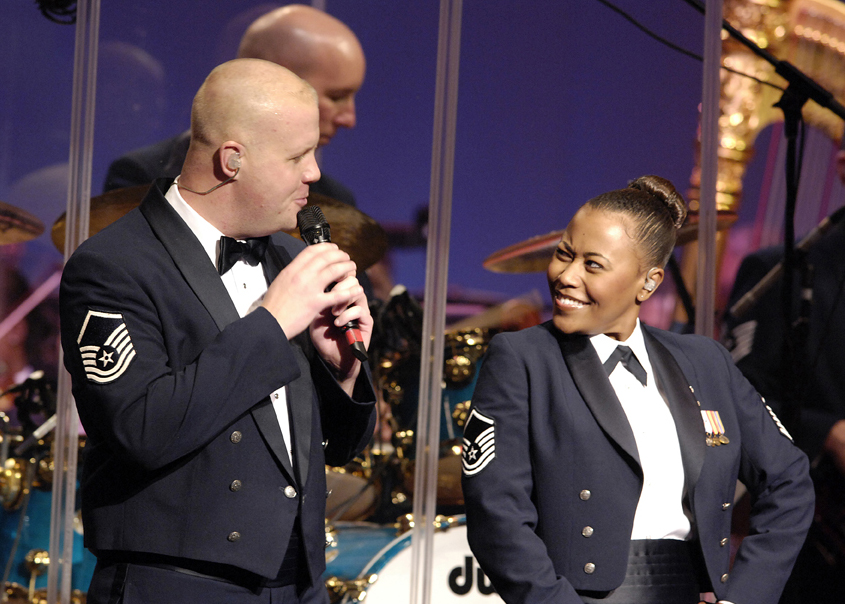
Children tune in Air Force

Master Sgts. Ryan Carson and Regina Coonrod, United States Air Force Band Singers, perform during a holiday concert at the Daughters of American Revolution Constitution Hall in Washington Dec. 1, 2006.